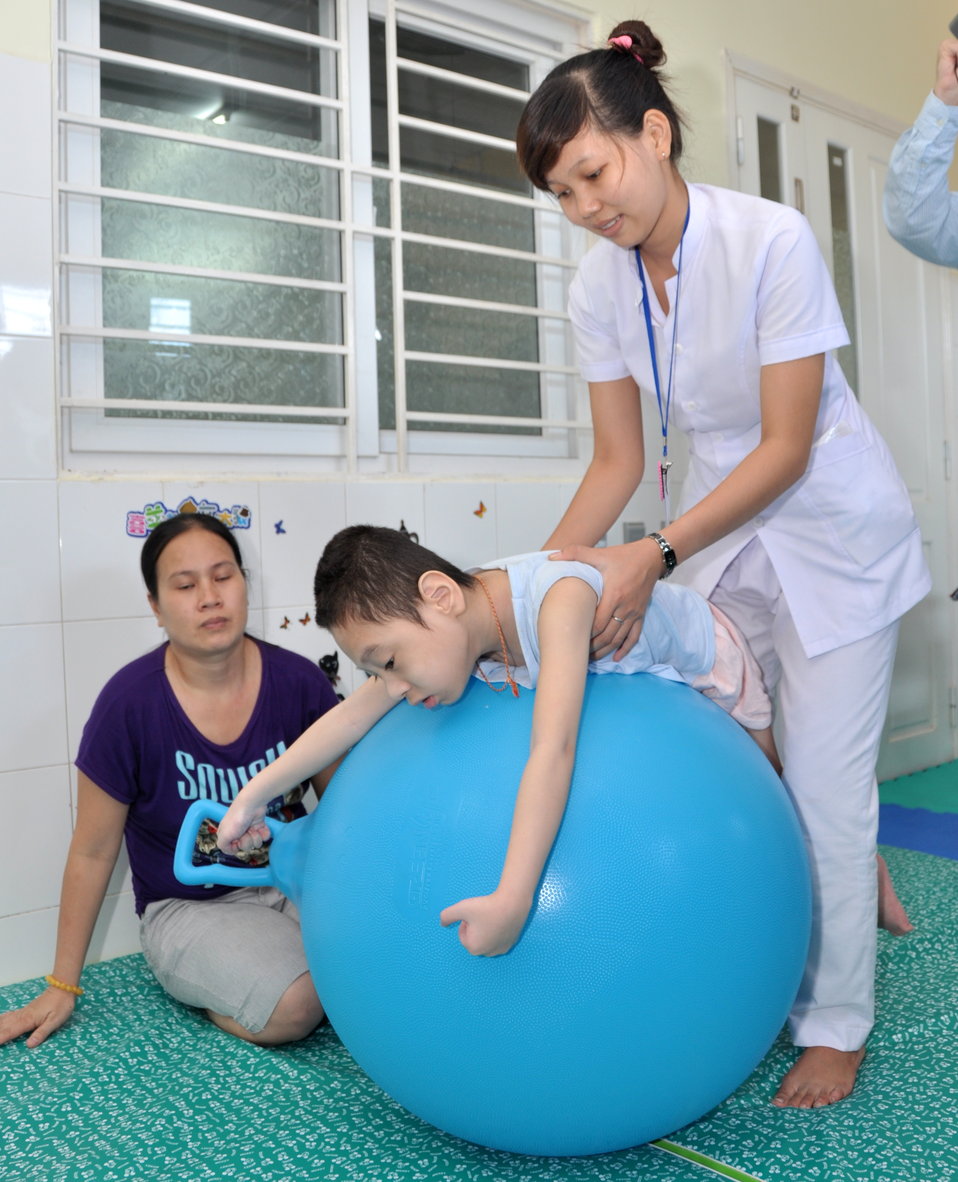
USAID and Partners Join to Open Rehabilitation Department at Women's and Children's Hospital of Danang

July 16, 2013